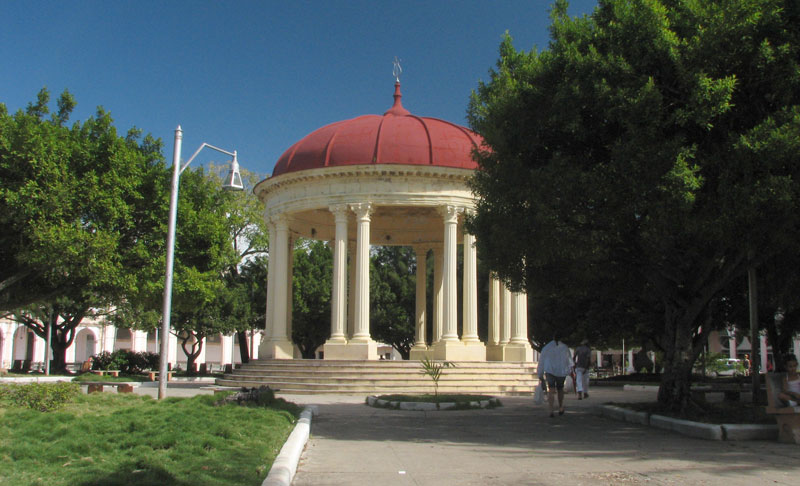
my own photos